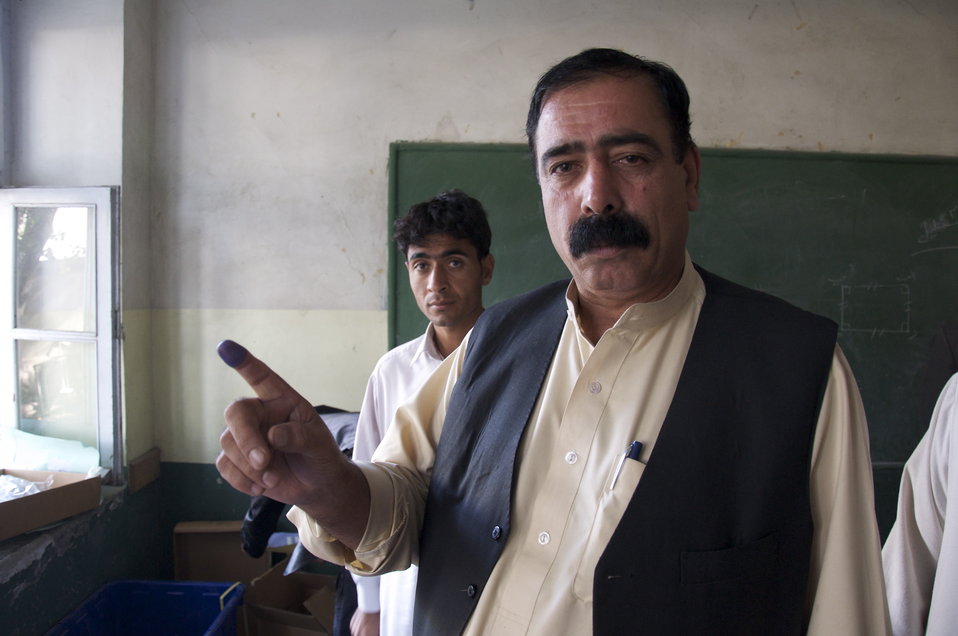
Kabul Voter